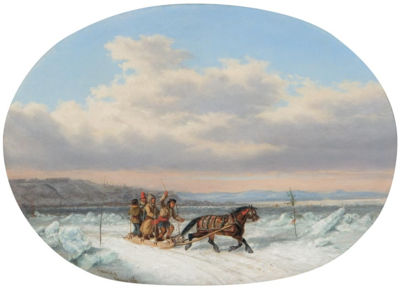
Crossing the Ice at Quebec', oil painting by Cornelius Krieghoff, 1861, 12.75 x 18 in.